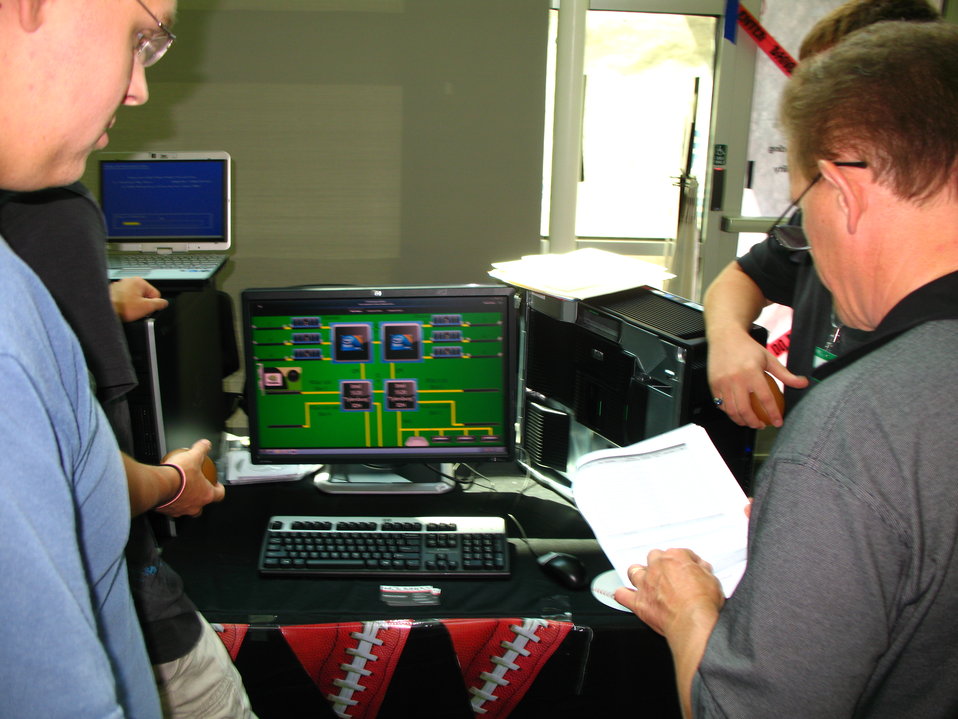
ARCSUPERS (11)